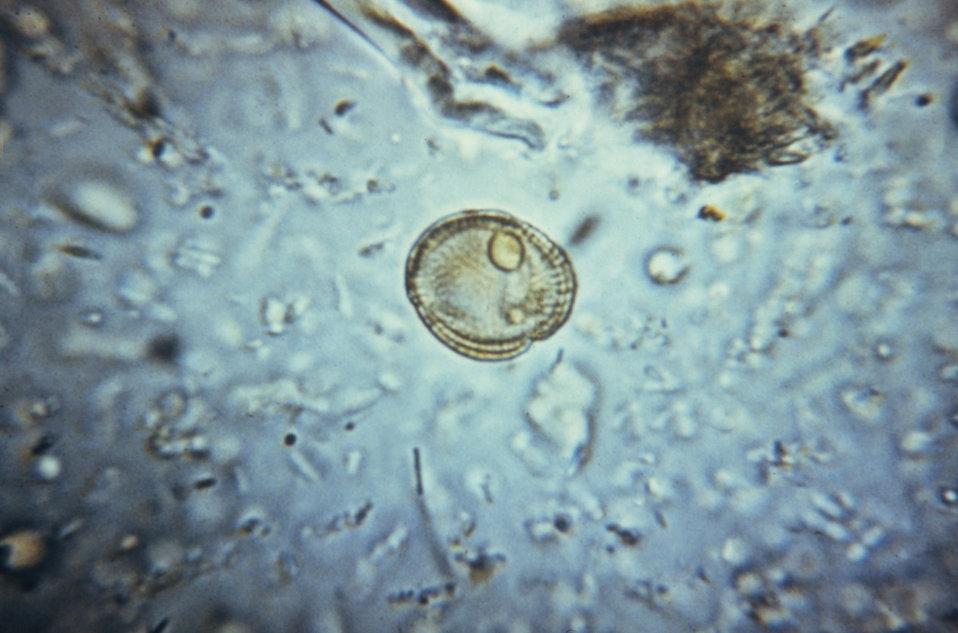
This micrograph reveals the presence of a pollen granule, which could be mistaken for a parasite's egg.